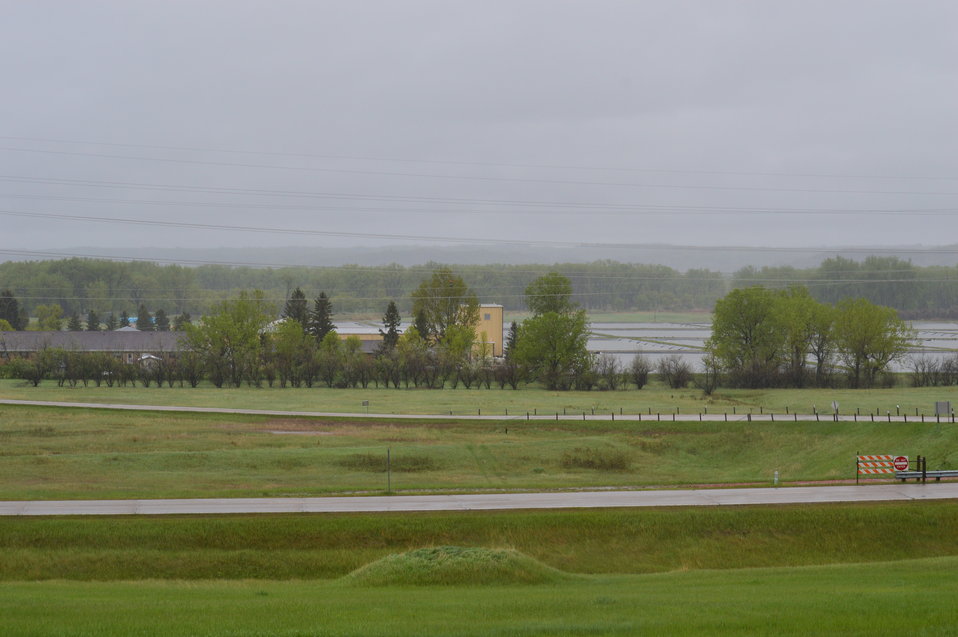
Overview of Garrison Dam NFH

Garrison Dam National Fish Hatchery in North Dakota.